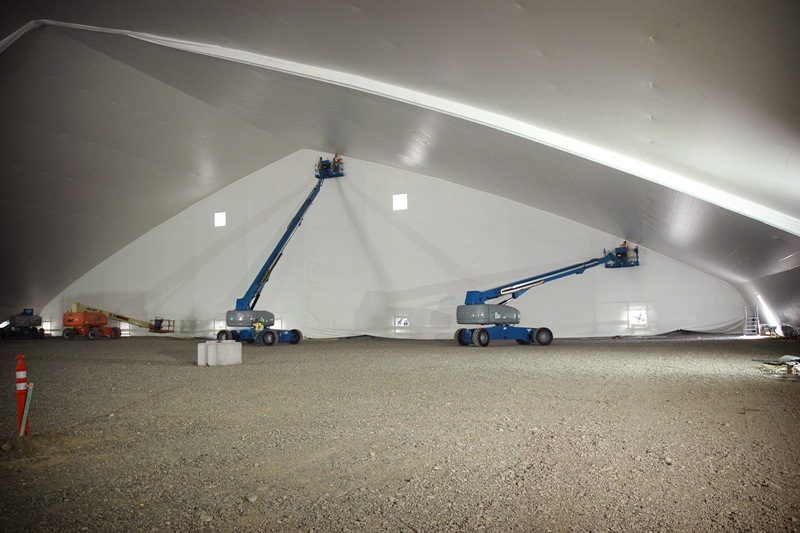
ARRA-funded Accelerated Retrieval Project III completed at the DOE Idaho Site

Workers at the Idaho Cleanup Project (ICP) accomplished another major environmental cleanup deliverable as they safely retrieved and packaged 539 cubic meters of targeted waste to complete the Accelerated Retrieval Project (ARP) III, over a year ahead of schedule.